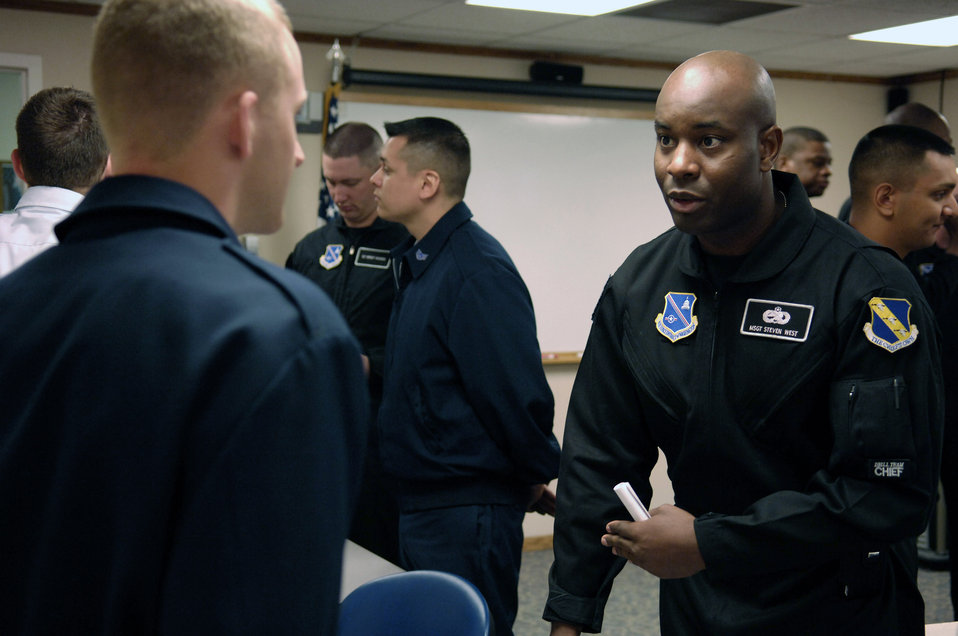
Drill team provides northern exposure for Air Force

Drill team member Master Sgt. Steven West speaks with an Airman Leadership School student May 6 at Grand Forks Air Force Base, N.D., during an Air Force Honor Guard recruiting briefing. The drill team is the traveling component of the Air Force Honor Guard and tours world-wide representing all Airmen and showcasing Air Force precision to recruit, retain and inspire for the Air Force mission.